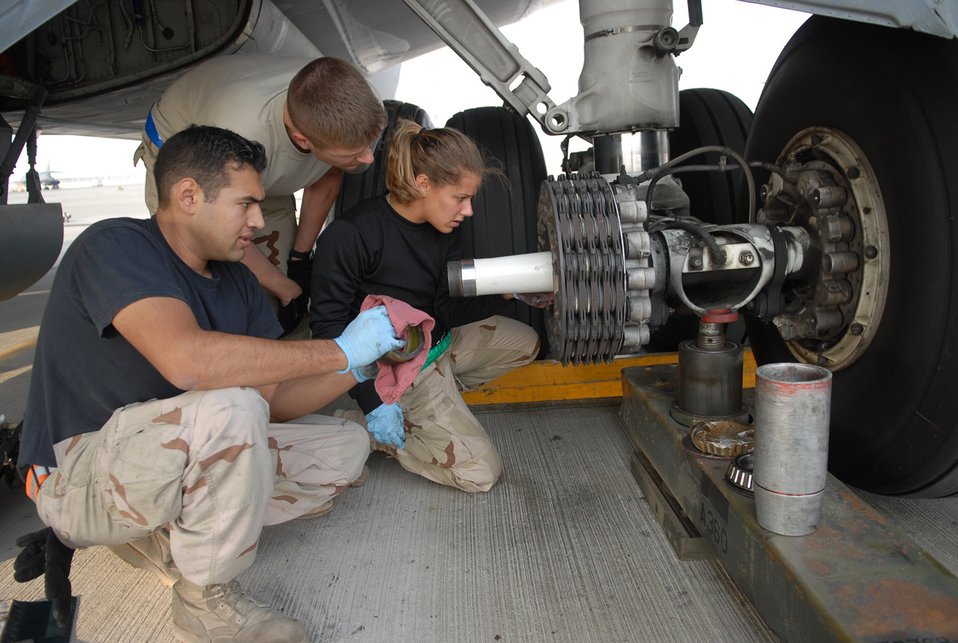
Tired

Staff Sgt. Ruben Mariscal, (from left) Staff Sgt. Frank Veres and Airman 1st Class Abigail Smith prepare to install a new wheel on a KC-135
Stratotanker Jan. 5 at a Southwest Asia air base. They are all assigned to the 379th Expeditionary Aircraft Maintenance Squadron. Sergeant Mariscal is deployed from MacDill Air Force Base, Fla., Sergeant Veres is deployed from Fairchild AFB, Wash., and Airman Smith is deployed from McConnell AFB, Kan.